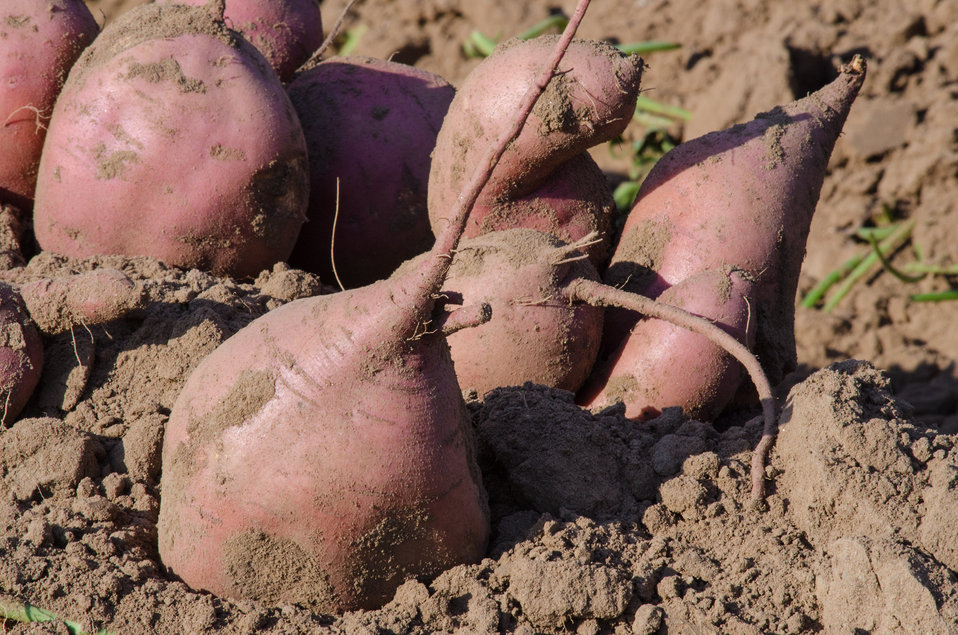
Harvested sweet potatoes are loaded onto a trailer at the Kirby Farms in Mechanicsville, VA on Friday, Sept. 20, 2013. The hand picked potatoes are taken to an onsite-heated warehouse to cure, a process that toughens the skin and brings the sweetness to a level normally expected in markets. Kirby Farms devotes 200 acres v to eggplant, spinach, beets, tomato, jalapeno peppers, melons and a variety of greens. Soybeans and small grain are grown on the remaining 300 acres. Using rotational crop practices allows Kirby Farms to double and triple crop yields. Wholesalers, who buy from this farm, sell the produce to major supermarkets in the Mid-Atlantic region, from North Carolina to Maryland. Restaurants in the local area prepare and serve the local bought produce to patrons in the Richmond, VA metropolitan area.